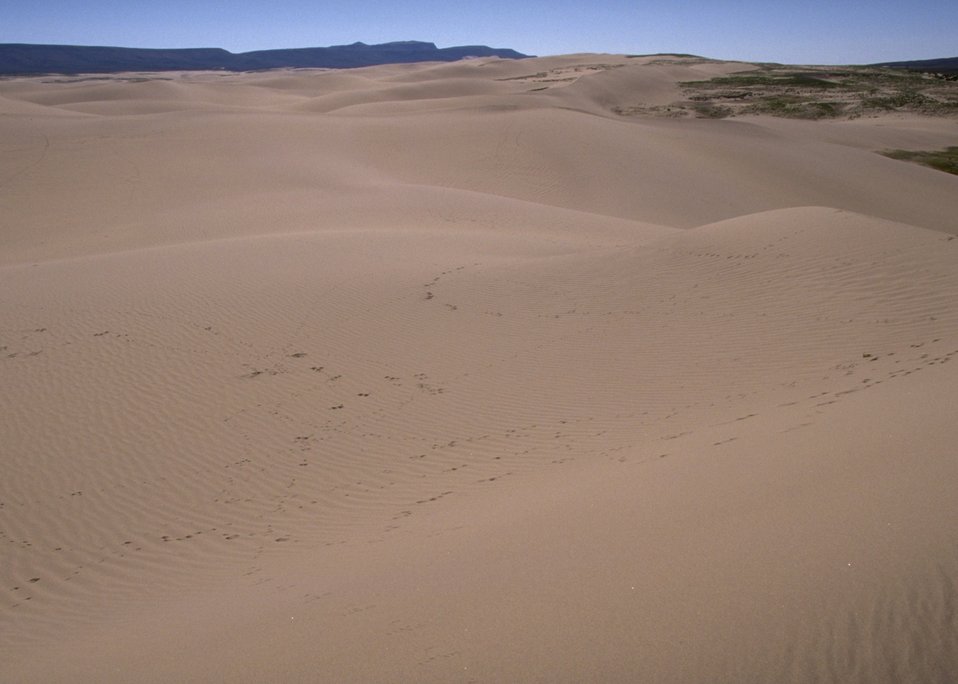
OHV Sand Dunes Area, Rock Springs Field Office.